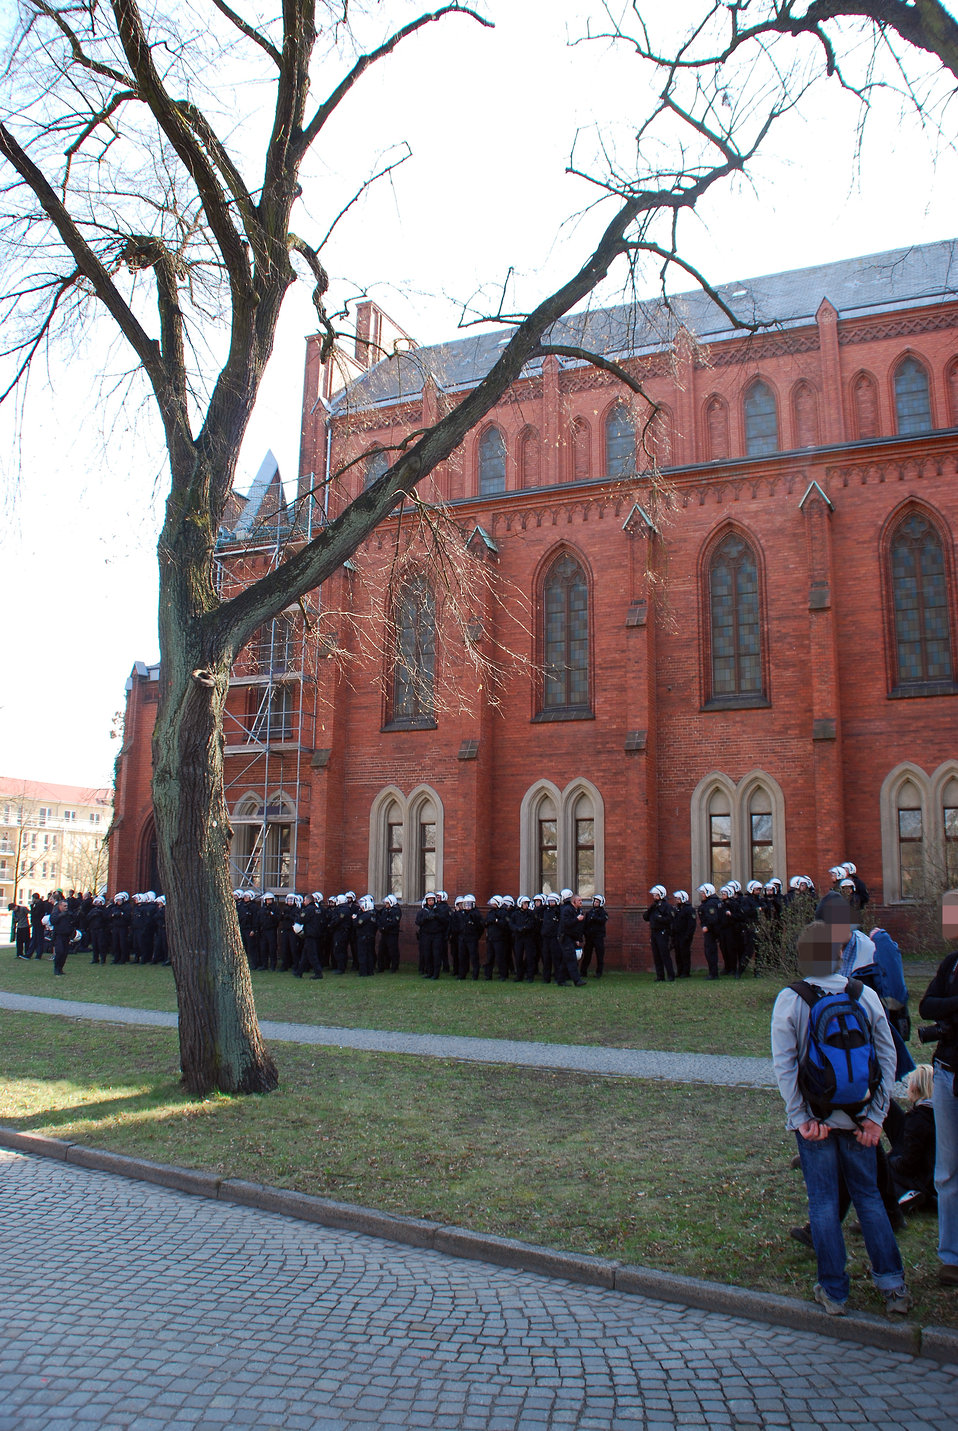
Proteste gegen den Nazi-Aufmarsch am 24.3.2012 in Frankfurt (Oder)